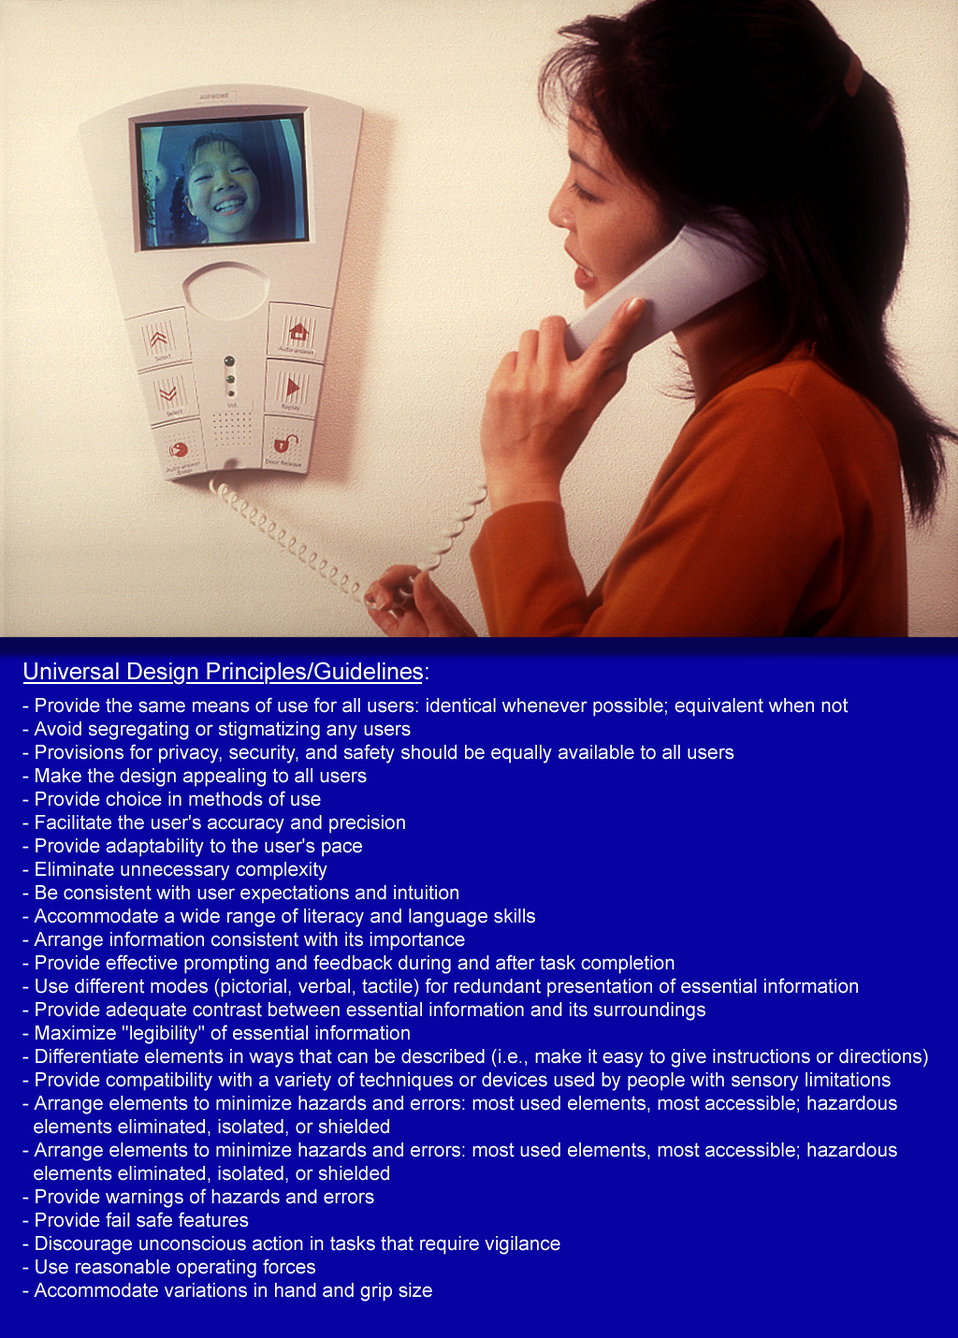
PHIL# 9108 - 9112 depicted the Aiphone� Universal Video Entry System, a prototypical video phone designed to allow residents to identify visitors before granting entrance, and to allow them to monitor communication without having to go to the master station should moving be slow, difficult, or undesirable at that time. The system's features include visual, tactile, and audible feedback offering an unusually high degree of redundancy in conveying information, while its Video Entry System offers security and convenience to all users, especially those who live alone.By moving the cursor key, then pushing the Auto-Answer button, a resident may select a message from the monitor's prerecorded message group to respond to visitors. This conveys the synthesized voice message to the visitor, a function extremely useful for someone who has difficulty speaking. If not at home, the system can video-record a visitor's image and voice, and later deliver a pre-selected audio message.